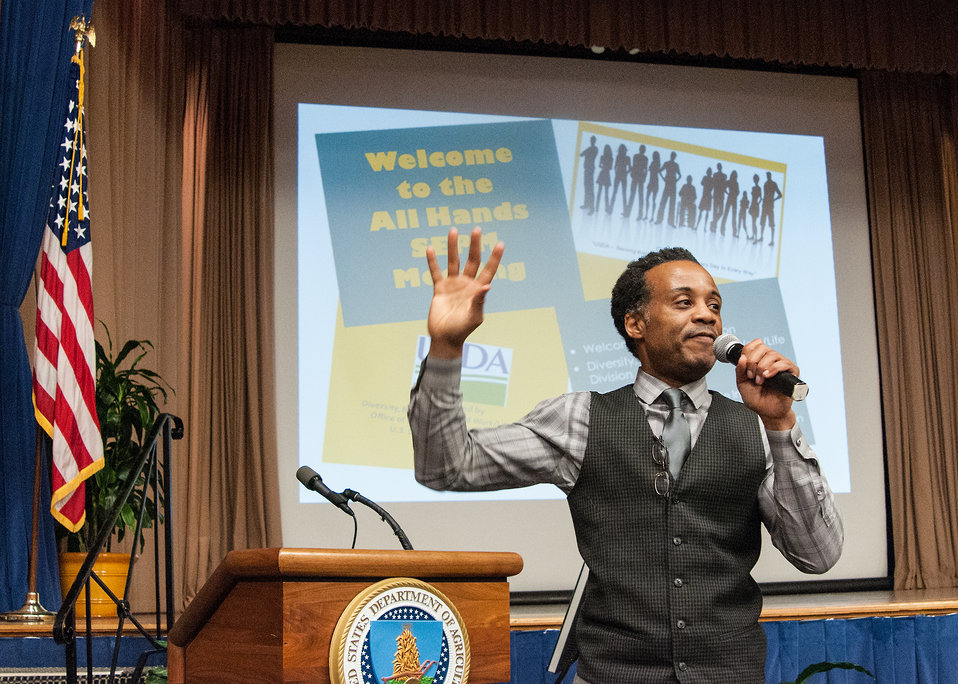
U.S. Office of Personnel Management, Training, Compliance and Strategy Office of Diversity Inclusion Deputy Director Bruce Stewart discusses Strategies to Increase Collaboration between Federal agencies at the First Annual All Hands Special Emphasis Program Managers (SEPM) Meeting at the U.S. Department of Agriculture Jefferson Auditorium in Washington, D.C. on Wednesday, Mar. 13, 2013.